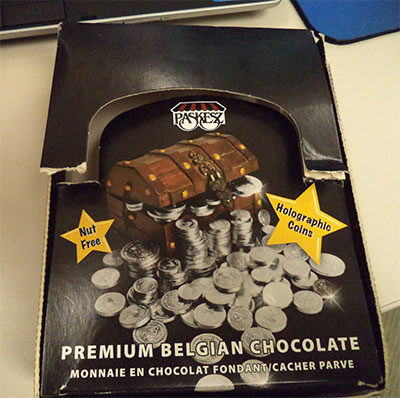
RECALLED – Chocolate Coins

January 14, 2014 – Product Recall – Paskesz Candy Company Issues Allergy Alert on Undeclared Milk in Premium Belgian Chocolate Coins.